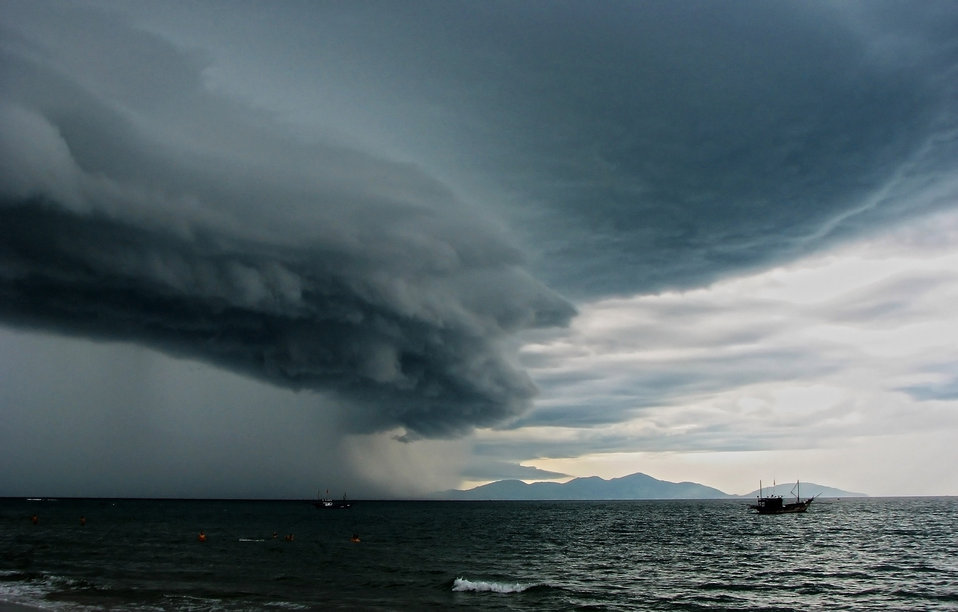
Angry nature #1

A thunderstorm at cua dai beach, hoi an town, quang nam province, central of vietnam..